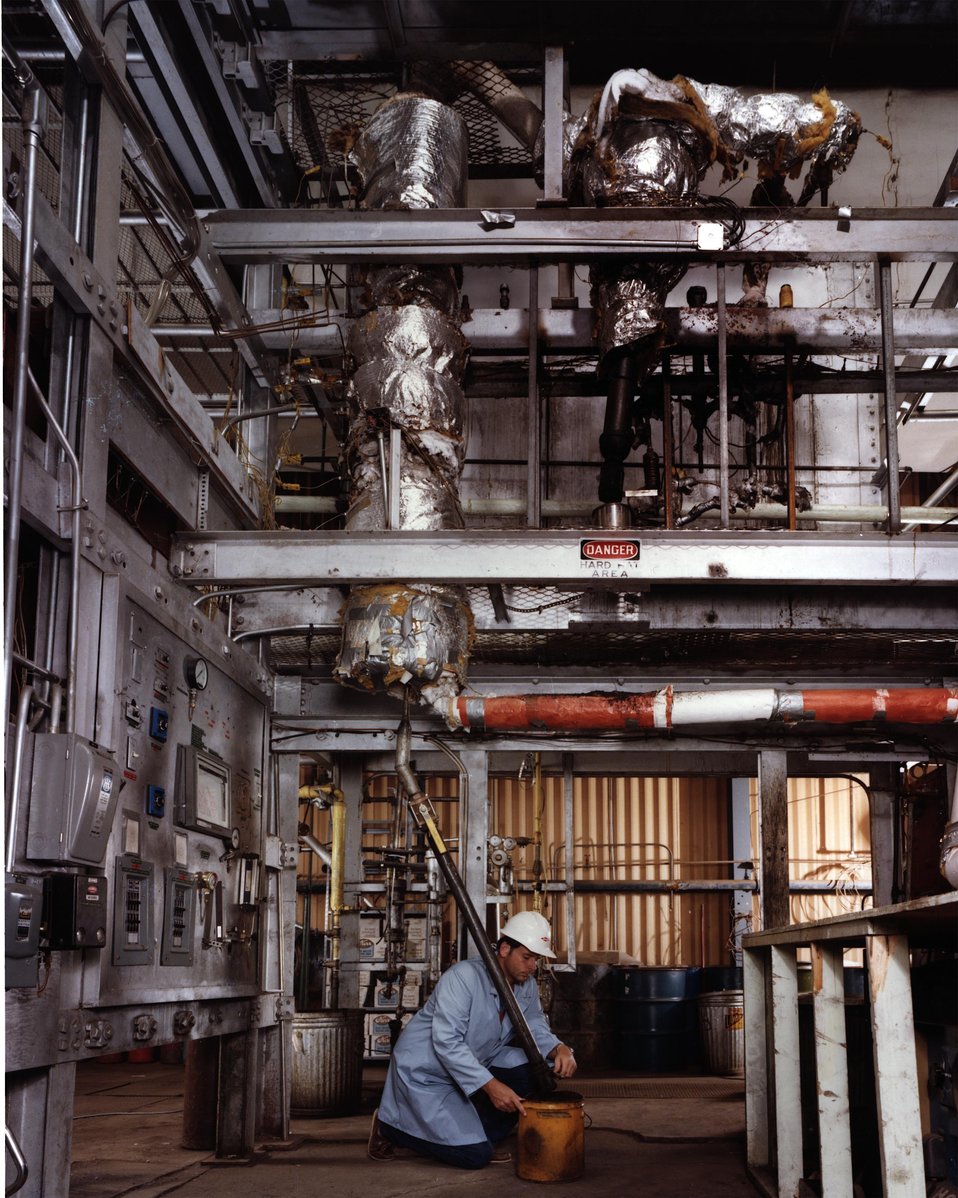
RANDY COTTON, STUDENT ASSISTANT, OBTAINS A SAMPLE OF CHAR FROM THE SGFM REACTOR.

THIS PROJECT ENTAILS CONDUCTING STUDIES IN AN EXISTING ONE HALF TON PER-DAY TEST REACTOR, UTILIZING ANIMAL MANURES AND OTHER BIOMASS MATERIALS AS FEED STOCKS, TO DETERMINE THE INFLUENCE OF TEMPERATURE, RESIDENCE TIME, PRESSURE, AND FEED STOCK MATERIALS ON THE YIELD AND QUALITY OF THE PROCESS.THE CHAR REMOVAL SYSTEM IS A MANUALLY OPERATED LOCK HOPPER WHICH CONTINUOUSLY SAMPLES THE SOLIDS IN THE REACTOR DURING EACH RUN.